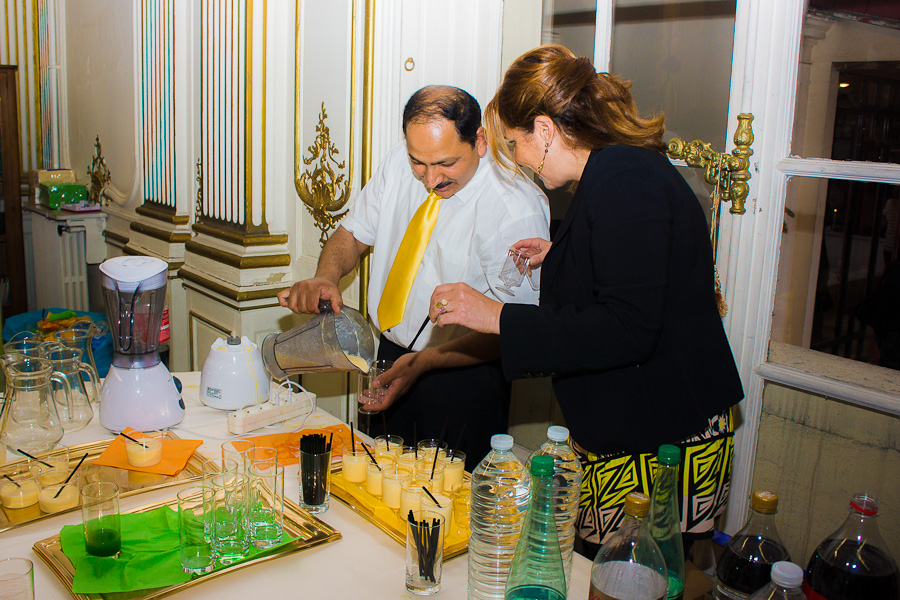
Celebrating Pakistani Mangoes in France

France, July 3, 2013: 'The mango event organized in the Embassy of Pakistan was a huge success. The majority of our guests were French and the feedback that we received from them regarding our Chaunsa and Sindhri variety was indeed very heartening and positive. I am certain that this collaborative venture will have a substantial impact on our efforts to carve a niche for Pakistani mangoes in the French market,' said the representative of Embassy of Pakistan in Paris, France.